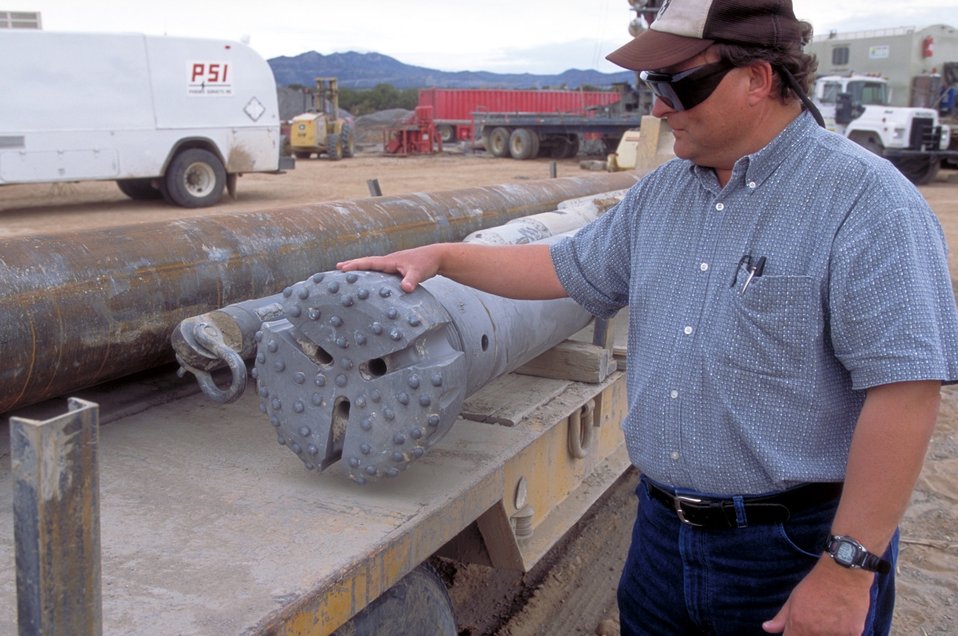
Drilling for coal bed methane near Price, Utah.